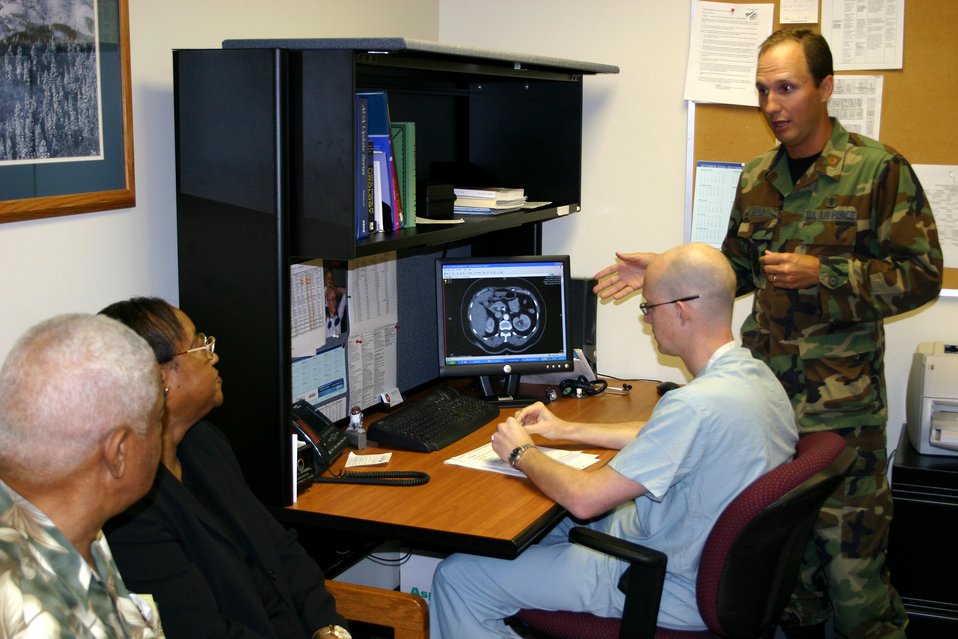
Air Force urologist receives first-place recognition

Maj. (Dr.) Kyle Weld (right) discusses scan results with patient Fannie Williams, her husband, retired Senior Master Sgt. Thaddeus Williams, and Capt. (Dr.) William Kizer. Dr. Weld is the urology department assistant chief of staff and Dr. Kizer is the department's chief resident.